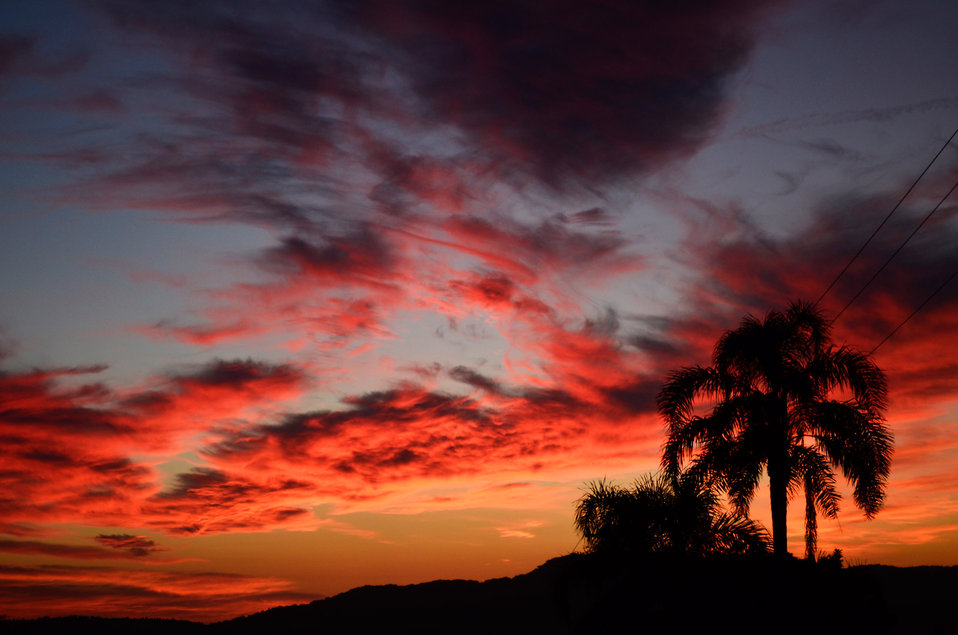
Dawn on the road.